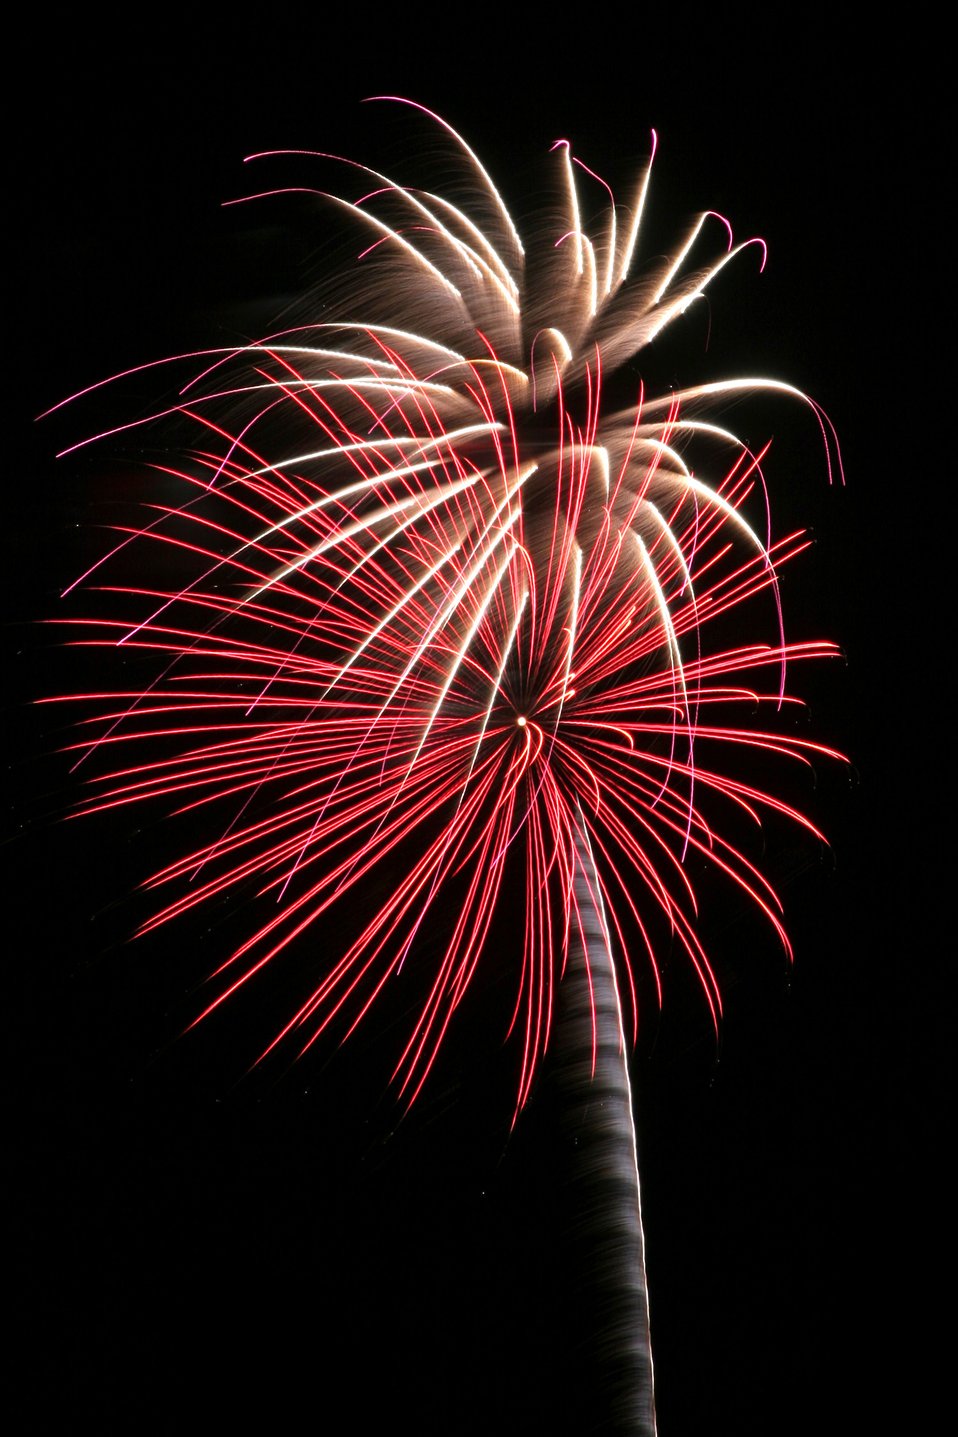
Celebrating the 4th of July

Happy Independence Day, America! Fireworks are shown from the 2005 celebration at Lackland Air Force Base, Texas.